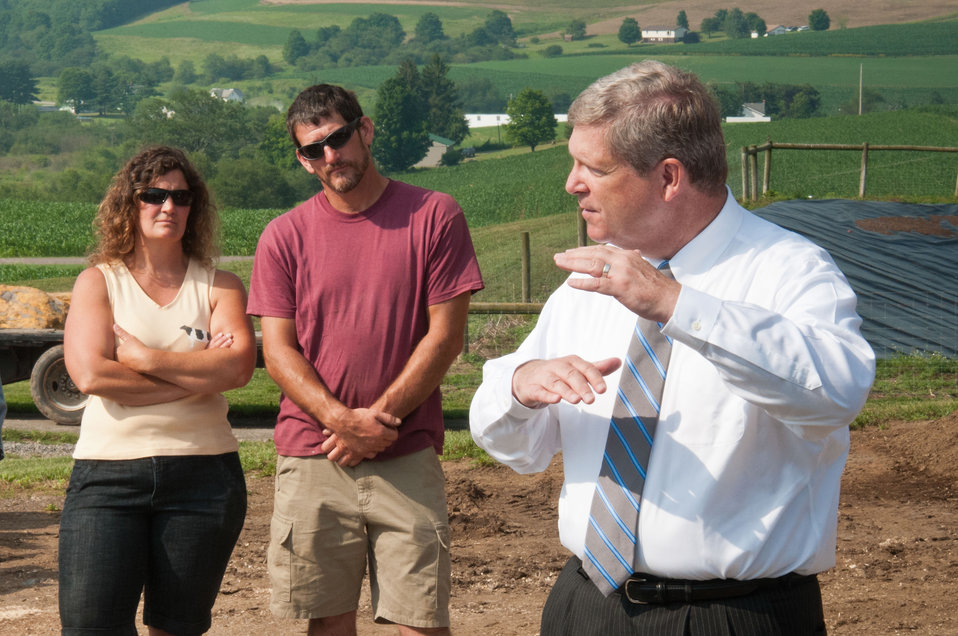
From left: Gail Stoltzfus, Glenn Stoltzfus and Agriculture Secretary Tom Vilsack visited the Stoltzfus dairy Pennwood Dairy Farms in Berlin, PA Tuesday, July 17, 2012. During his visit Secretary Vilsack highlighted the U.S. Department of Agriculture’s (USDA) energy efficiency programs and announced a new effort to help rural consumers make affordable, energy-efficient improvements to their homes and businesses. He also discussed the economy of rural America, the drought and the next Farm Bill.